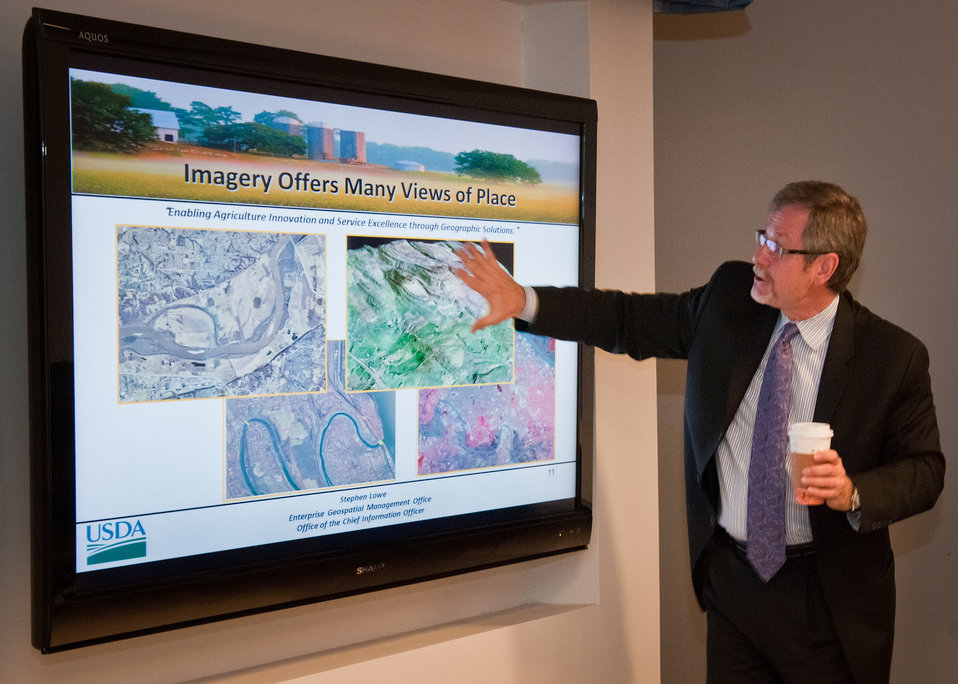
Stephen Lowe, Geospatial Information Officer, Office of the Chief Information Officer explains the geospatial technology used at the United States Department of Agriculture (USDA) during a visit of students from the Springbrook High School, Academy of Information Technology in Silver Spring, Maryland on Wednesday, April 13, 2011. USDA holds an Information Technology Job Shadow Day annually. It is an opportunity for students from local high schools to learn the breadth and depth of information technology at USDA and how it is applied the department.